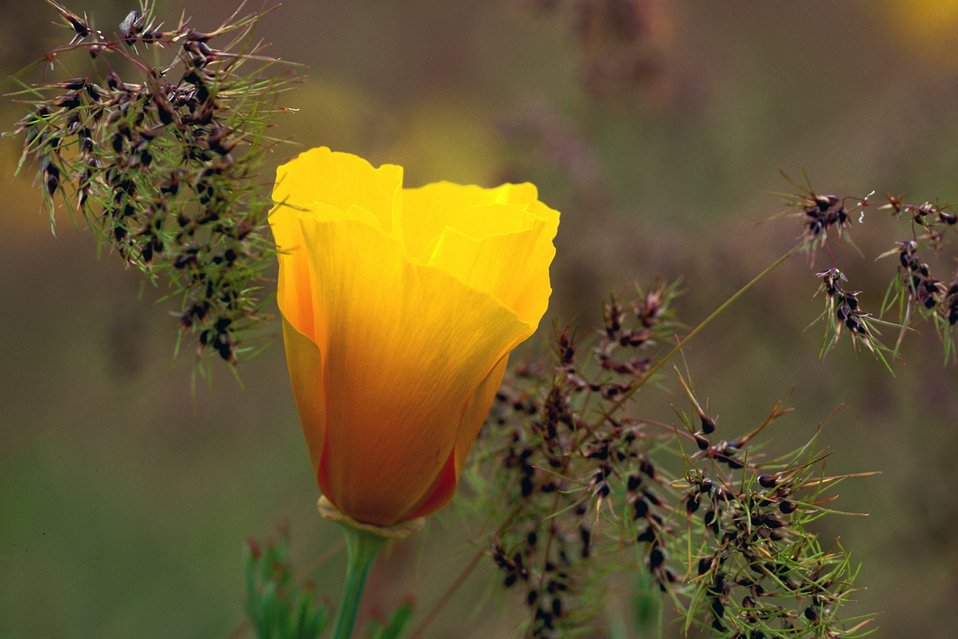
Poppy and Bluegrass near Applegate River. Terry Tuttle, Medford Botany1